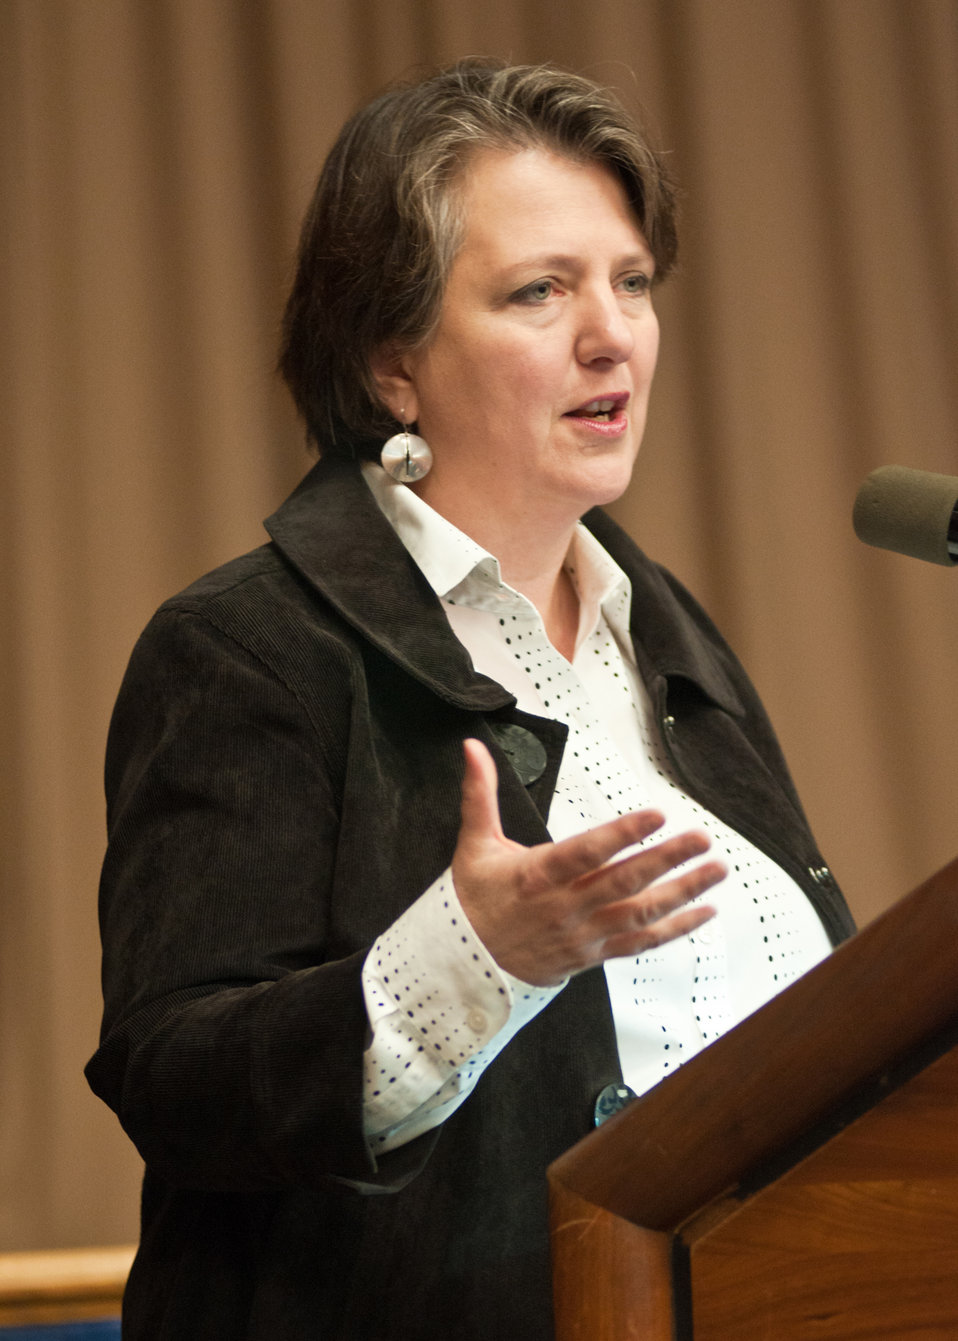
Deputy Agriculture Secretary Kathleen Merrigan addresses stakeholders and members of the public during the USDA Activities and Priorities Related to Organic Agriculture and Markets Public Listening Session held at the U.S. Department of Agriculture, in Washington DC, Tuesday, September 20, 2011. The purpose of the event was to gain the perspective of stakeholders and members of the public, important tools to help USDA Programs examine and prioritize their activities and objectives in order to best serve the organic community. During Secretary Merrigans’ tenure as the Administrator of the Agricultural Marketing Service during the Clinton administration the final rule for the National Organic Program was announced.